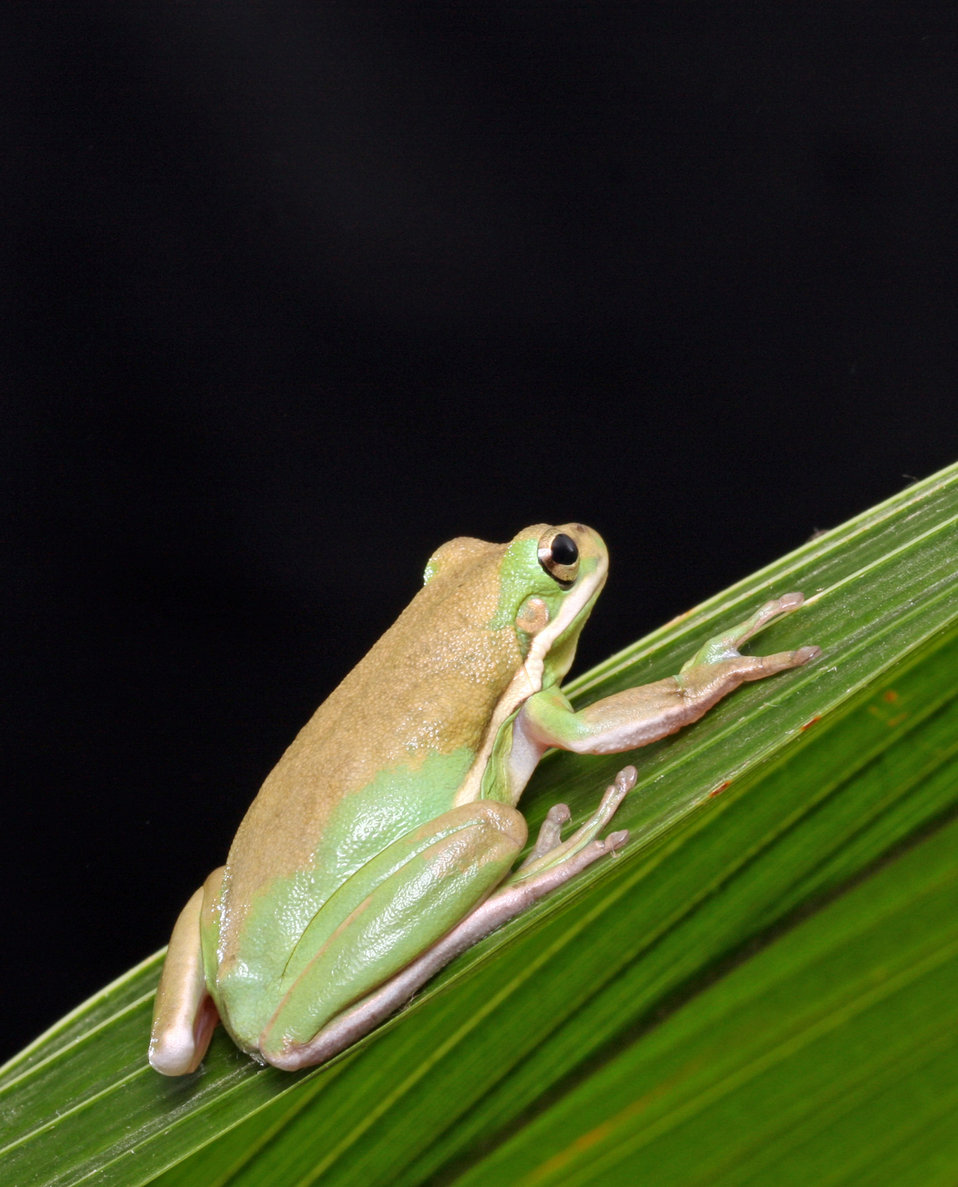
Frog macro portrait

Close-up macro portrait of a green tree frog on a palm leaf.